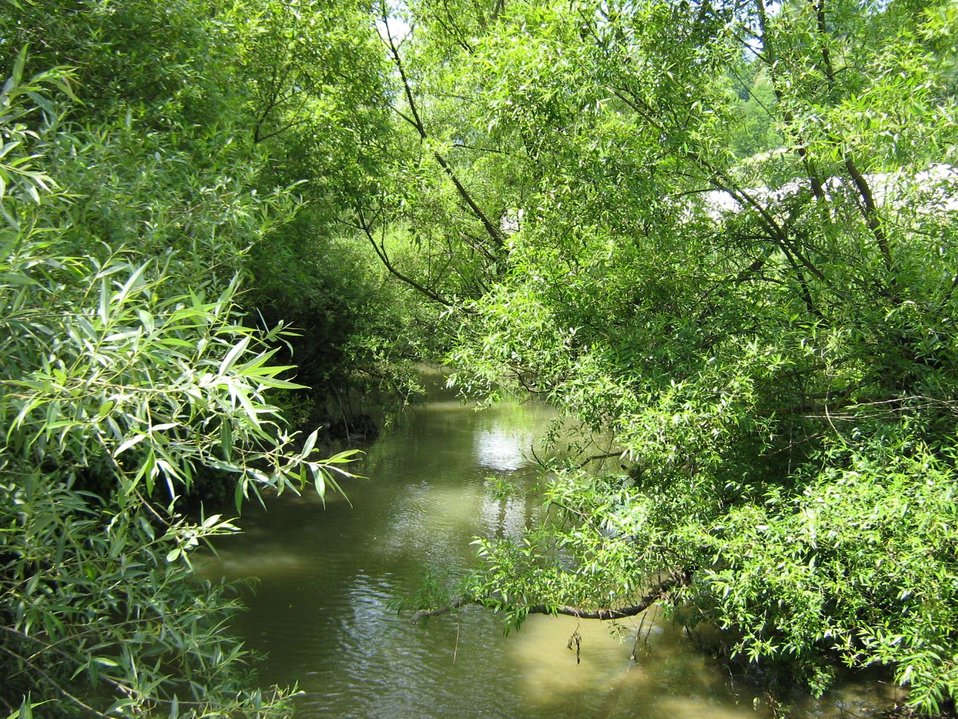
Română: Apa care curge prin Agries